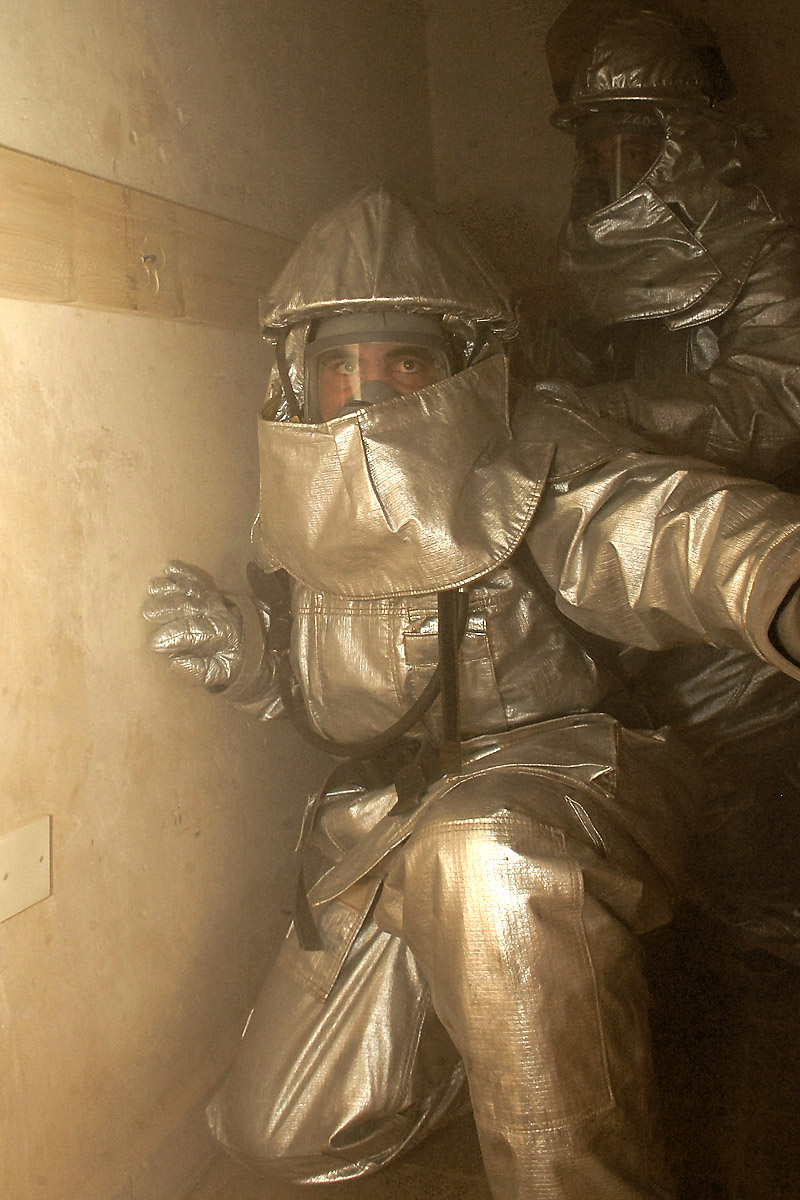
New training structure benefits Iraqi firefighters

Iraqi firefighters traverse a smoky room during refresher training within confined spaces July 30 at Kirkuk Regional Air Base, Iraq. Firefighters with the 506th Expeditionary Civil Engineer Squadron here facilitated the training to teach Iraqi firefighters how to rescue victims trapped in a building burning.